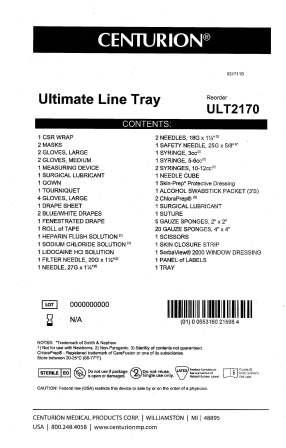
RECALLED - Convenience kits which contain bacteriostatic sodium chloride solution by American Regent

April 1, 2011 - Product Recall - Centurion Medical Products Initiates Voluntary Recall of Customized Convenience Kits (including select Central Venous Catheter, PICC Insertion, and VAD Trays) that contain American Regent’s Bacteriostatic Sodium Chloride Injection, USP, 0.9% 30 mL Multiple Dose Vials.